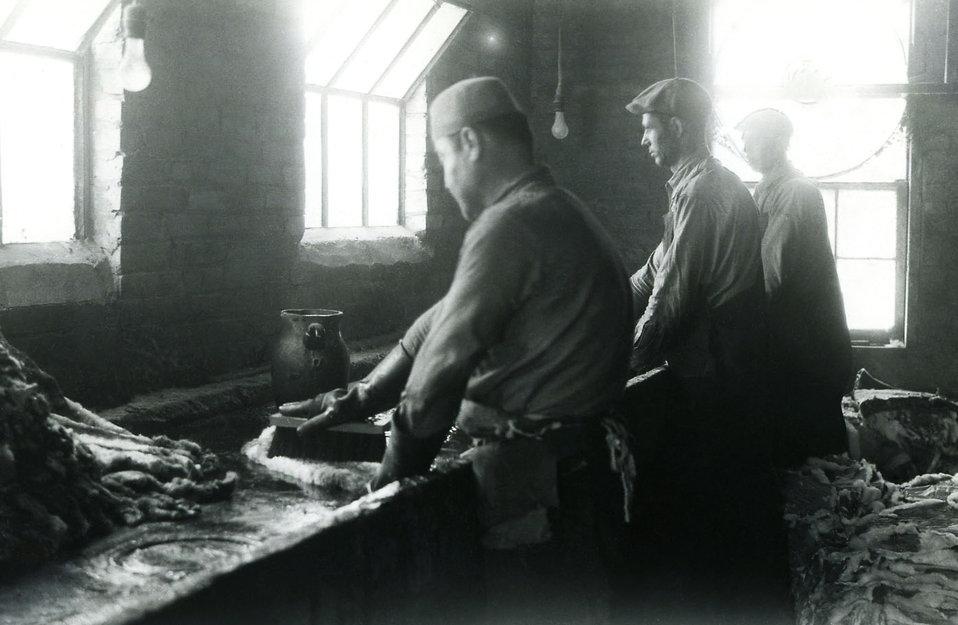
The photograph shows workers "carroting", or treating the fur with mercury nitrate, Hg(NO3)2, in a felt hat-making factory where public health officials conducted numerous studies which focused on the effects of mercury upon workers who are exposed to this heavy elemental metal. (See complete series: PHIL ID#s: 6810 - 6813).